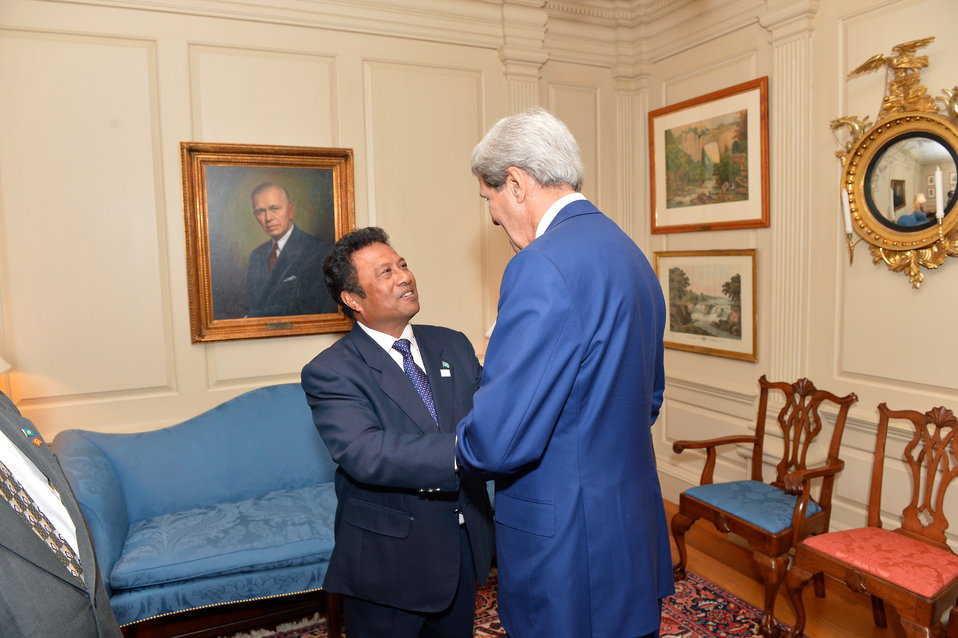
Secretary Kerry Meets With Palau President Tommy Remengesau, Jr.

U.S. Secretary of State John Kerry delivers remarks with the President of Palau Tommy Remengesau, Jr. at the U.S. Department of State in Washington, D.C. on June 16, 2014.